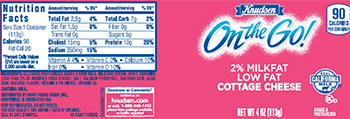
RECALLED – Cottage Cheese products

May 17, 2014 – Product Recall – Kraft Foods Group Voluntarily Recalls Select Cottage Cheese Products Due to Out-of-Standard Storage Temperatures
Certain Knudsen Cottage Cheese, Breakstone’s Cottage Cheese, Simply Kraft Cottage Cheese and Daily Chef Cottage Cheese Products Included in the Recall
.